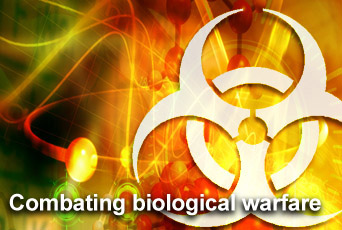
Air Force proactive in combating biological warfare

To help Air Force bases respond better to biological threats, Air Force officials have approved a new Counter-Biological Warfare Concept of Operations and Air Force Instruction.